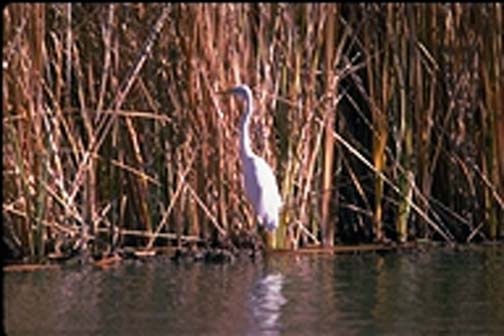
Great Egret relaxing at Ferguson Lake.